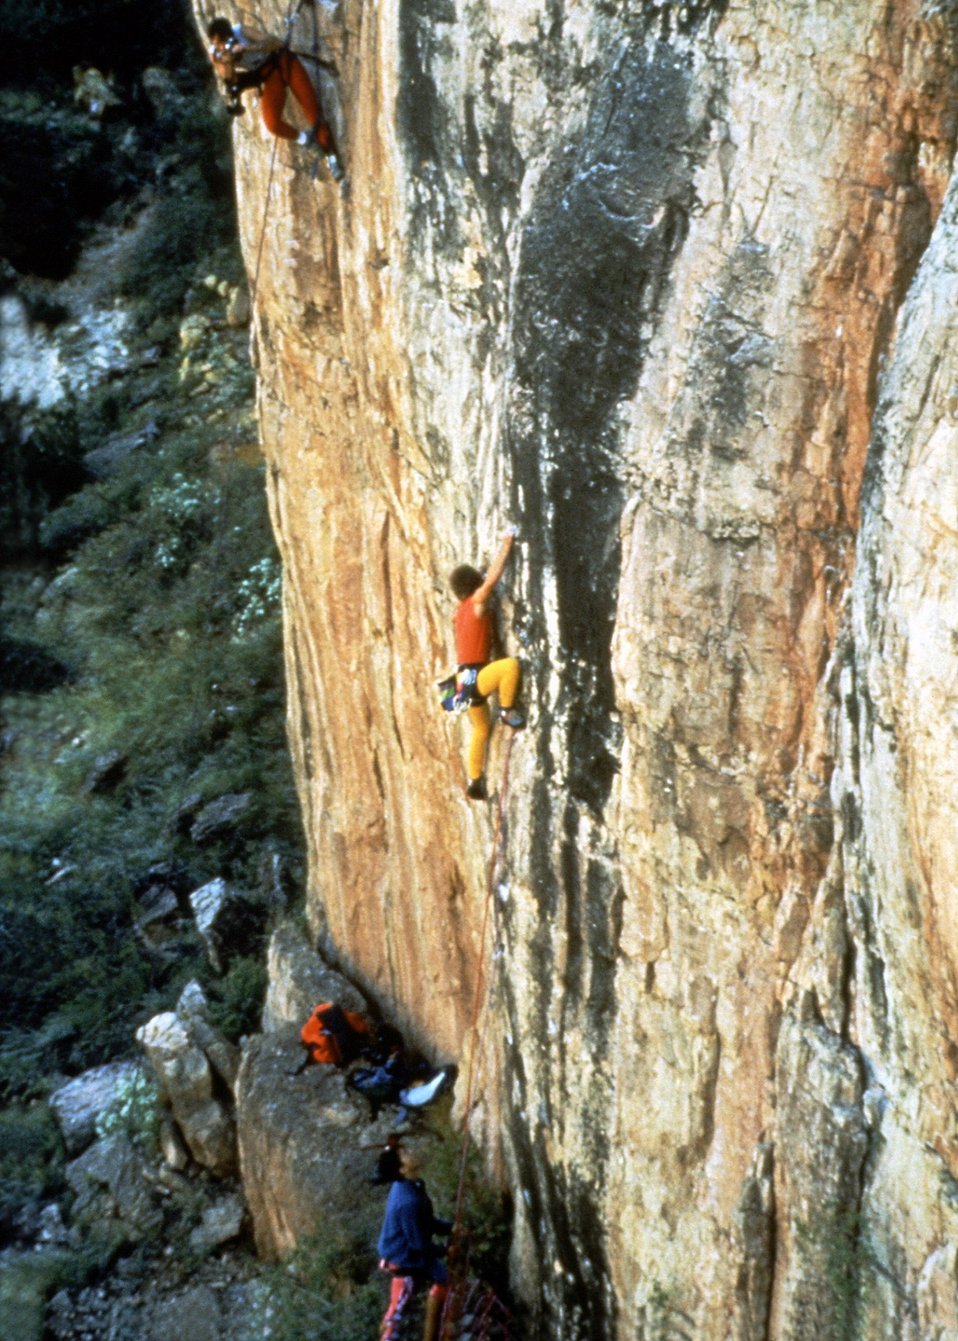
Climbers on Shelf Road